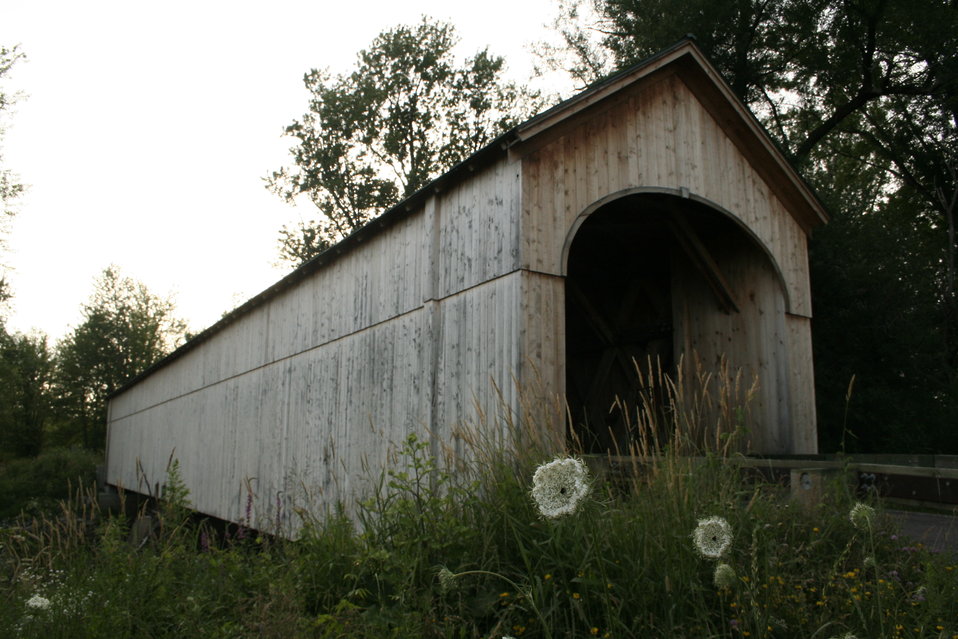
Covered bridge bat site in Vermont

An historic bridge in Vermont is home to a maternity colony of little brown bats.

Biologists provided alternative habitat for bats while bridge was being restored.